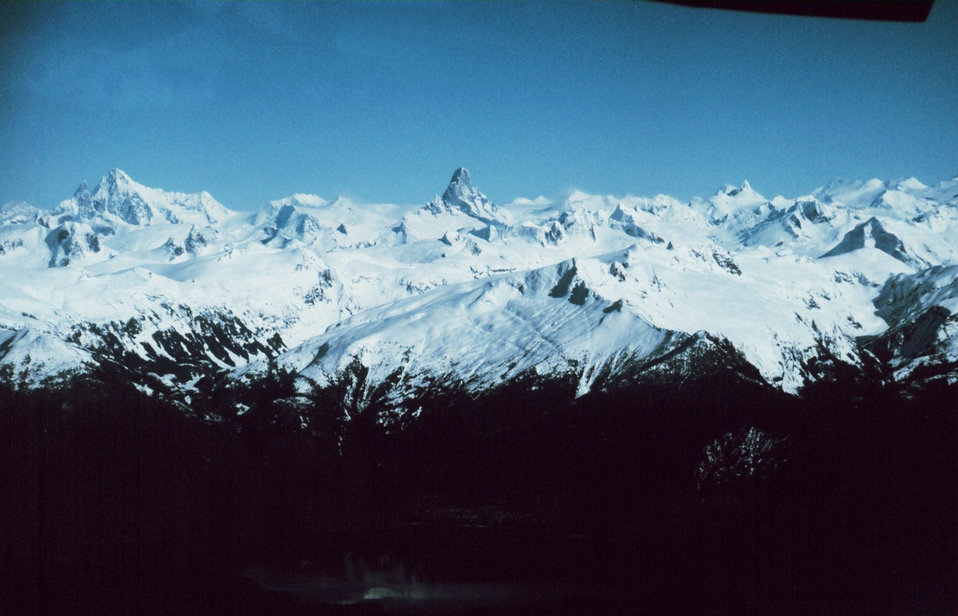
The Devil's Thumb in the center with Mount Burkett to the left